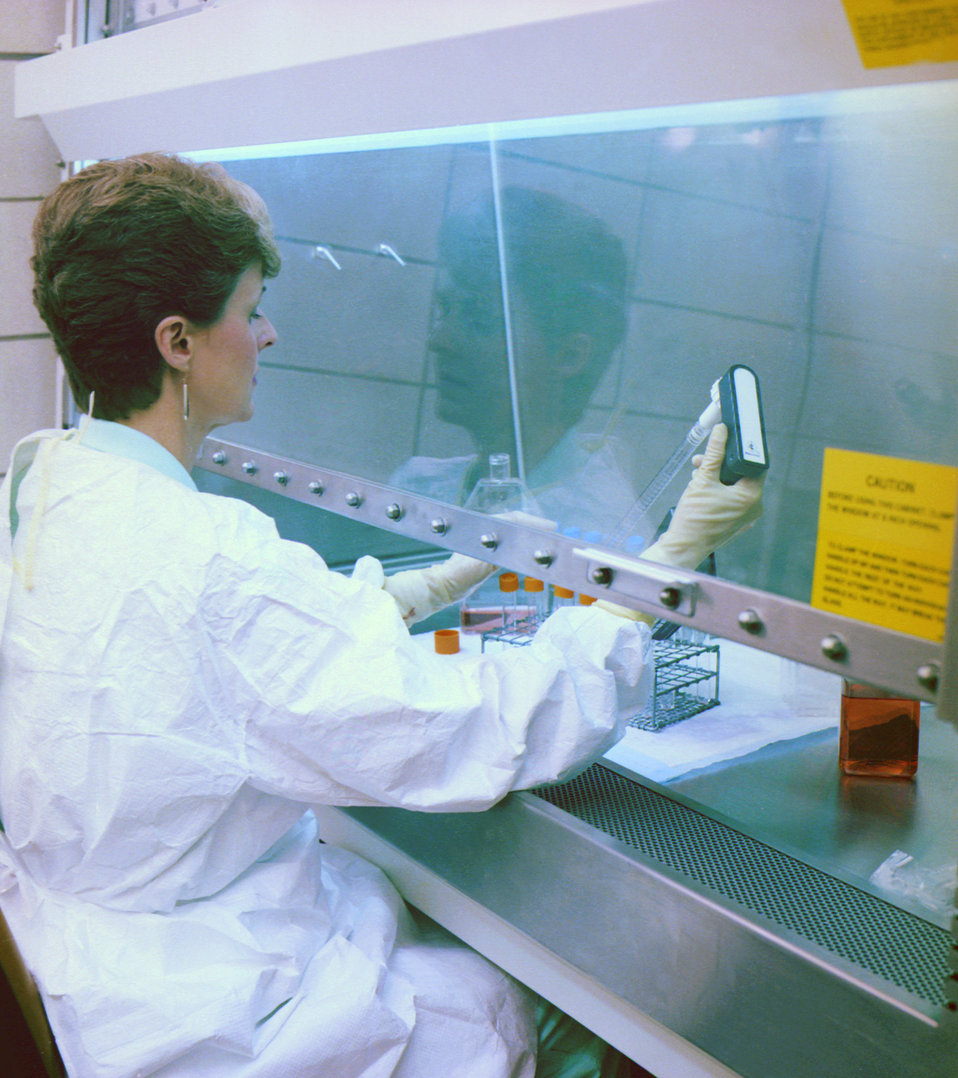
CDC laboratorian, Carol Reed, conducting AIDS research.